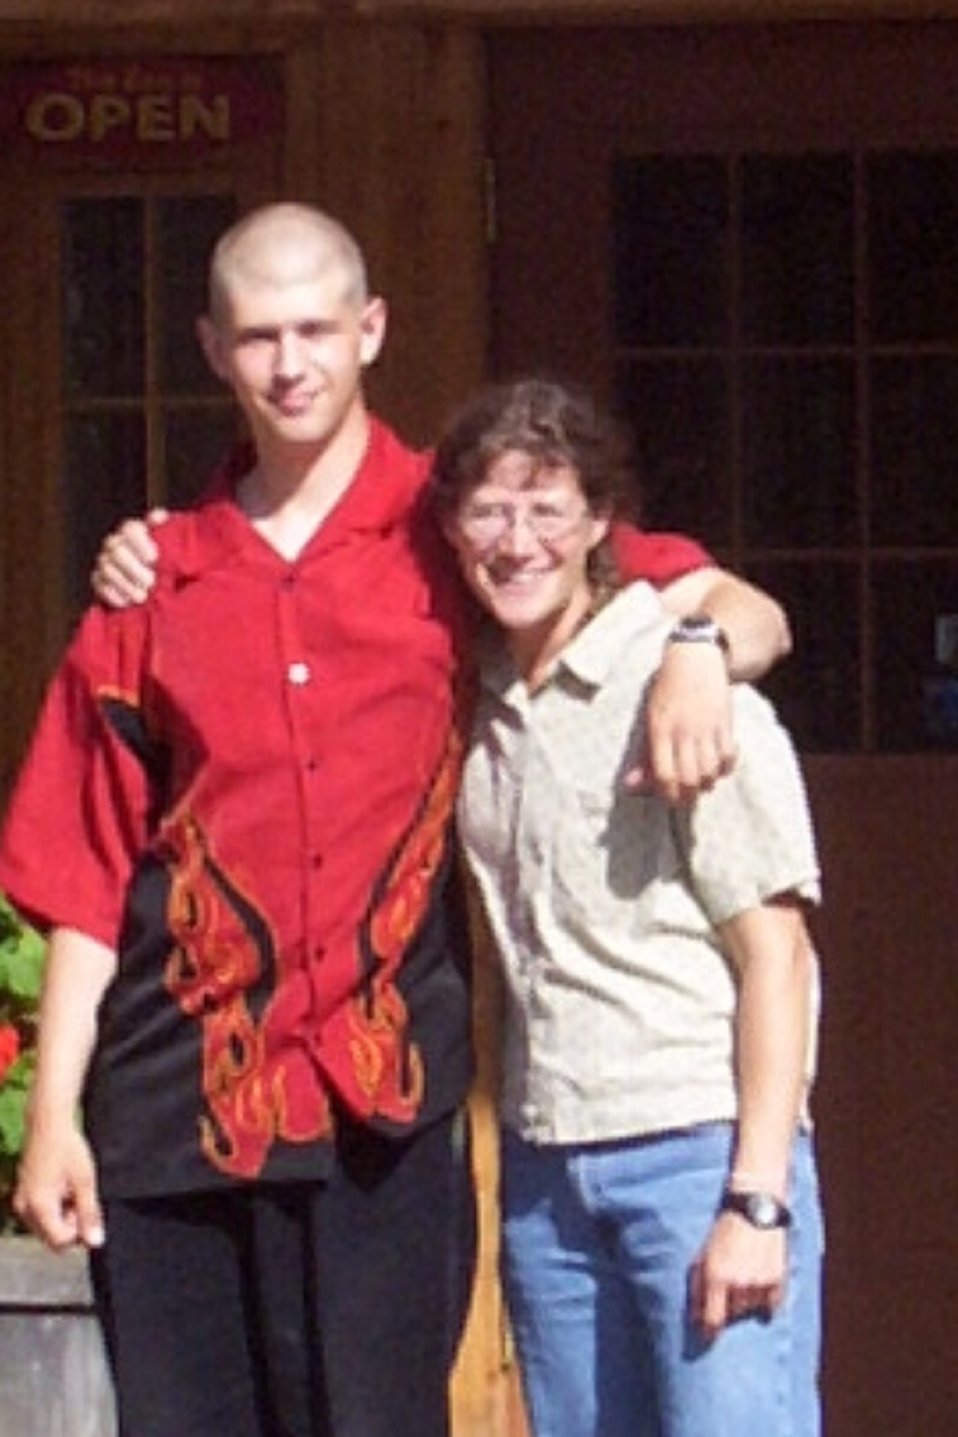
Paula Hartzell and Kerry Scott

Paula Hartzell, who now works at Tern Island Field Station in the Hawaiian Islands National Wildlife Refuge, Papahanaumokuakea Marine National Monument, joined the military after college to save money. She was a food inspector in the U.S. Army in Germany from 1979 to 1982. She also served in the Reserves. Her son followed her into the military and was killed in Iraq. She says,” I am very proud of my son.” Nowadays, she adds, “The albatross, boobies, noddies, terns, sea turtles, monk seals and FWS Volunteers who share the atoll with me keep me on my toes,” and she says she is “constantly filled with the beauty and wonder that motivates me to make this place safe for wildlife.”